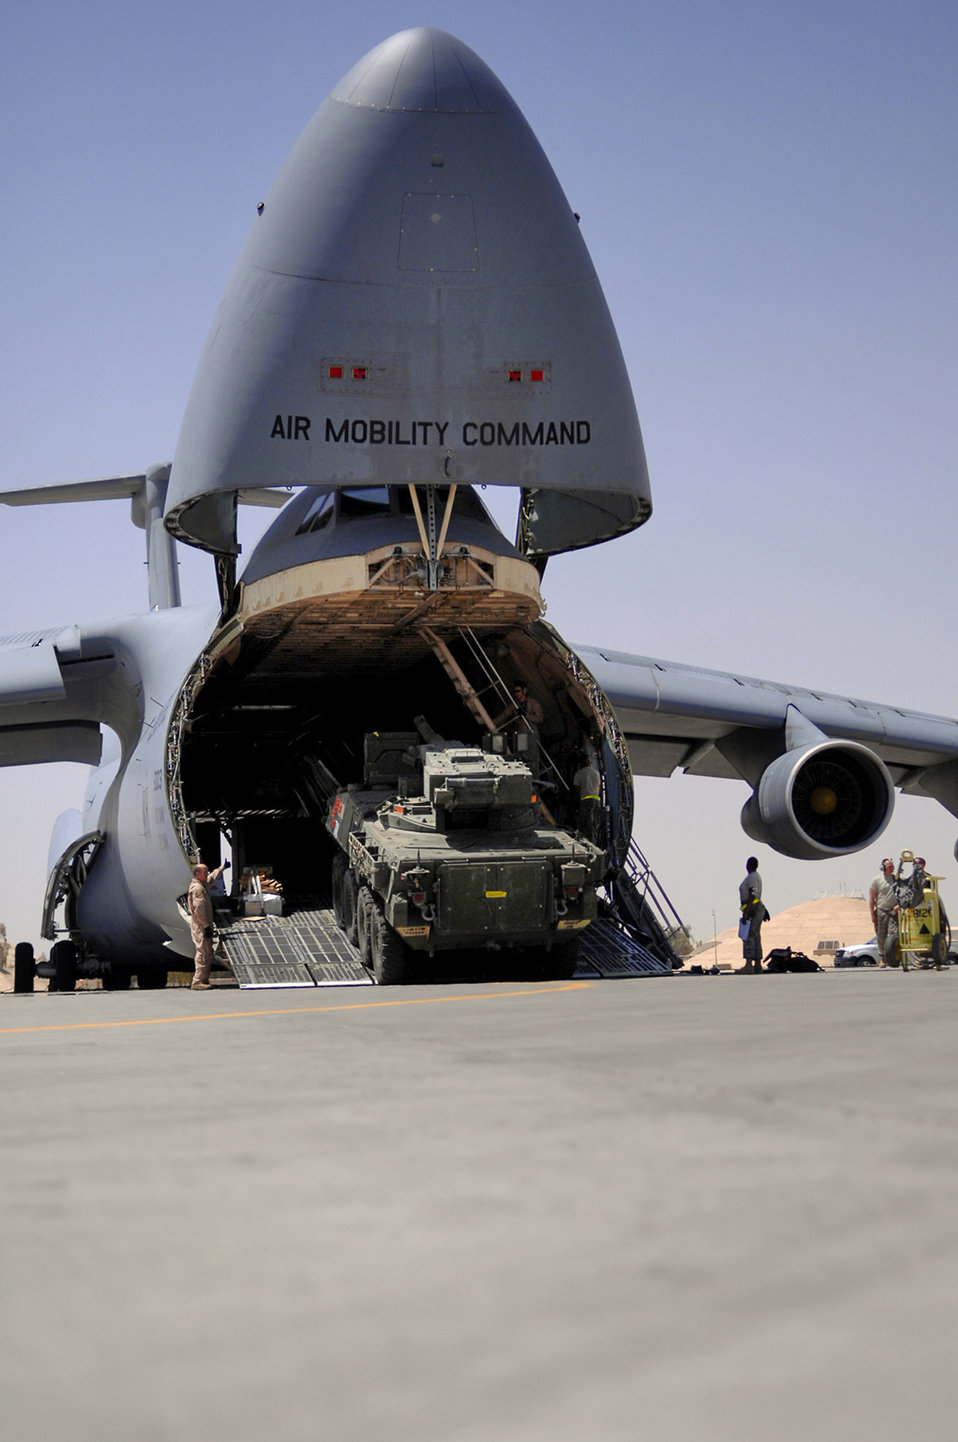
Open wide

An Army Stryker Infantry Carrier Vehicle is driven onto a C-5 Galaxy June 25 at Joint Base Balad, Iraq. The C-5 has a kneeling landing gear system that permits lowering of the parked aircraft so the cargo floor is at truck-bed height or to facilitate vehicle loading and unloading.